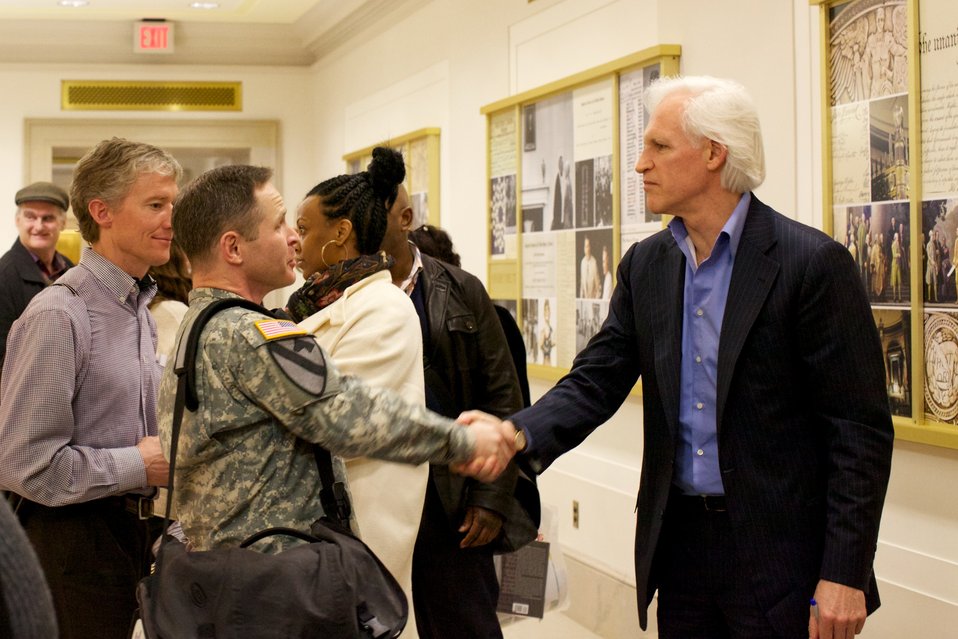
The Monuments Men; Robeert Edsel (right), greets and autographs books for lecture attendees